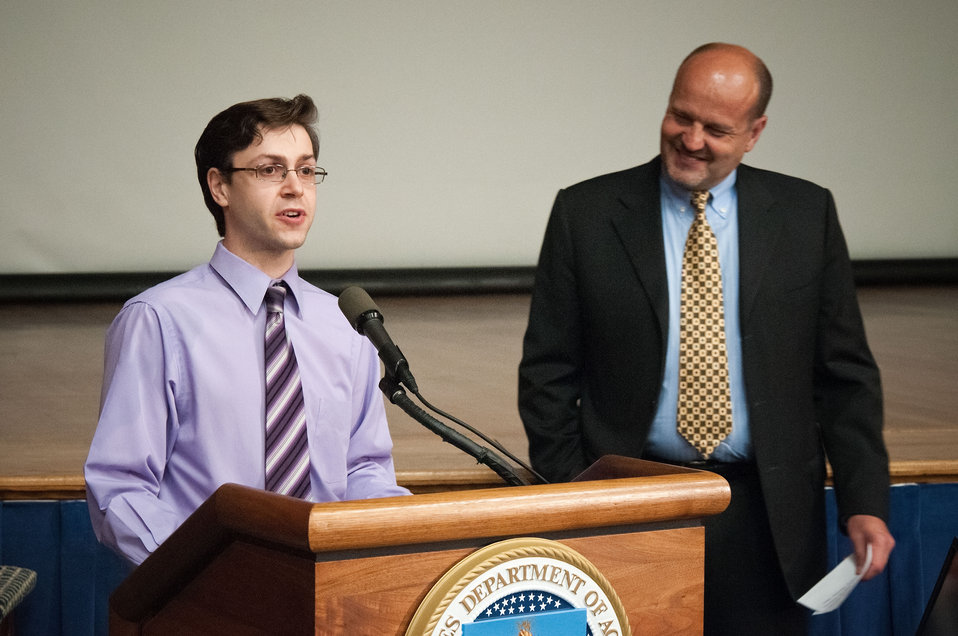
Alex Minchenkov (left), National, Lesbian, Gay, Bisexual and Transgender Special Emphasis Program Manager, National Agricultural Statistics Service and Larry Durrant (right), National, Lesbian, Gay, Bisexual and Transgender Special Emphasis Program Manager, Farm Service Agency offer memorable quotes by the Honorable Barney Frank, Fourth Congressional District Massachusetts at the Lesbian, Gay, Bisexual and Transgender (LGBT) Pride Observance, “The Sum of Us: Lesbian, Gay, Bisexual and Transgender Pioneers” at the United States Department of Agriculture in Washington, D.C., Thursday, June 7, 2012.